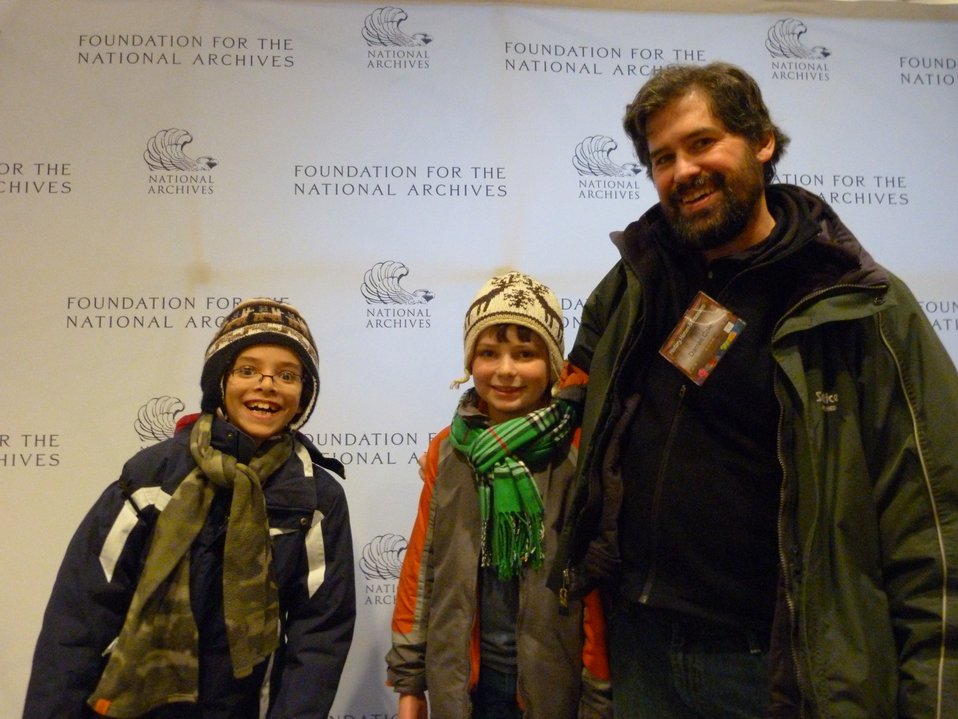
Rotunda Sleepover

Rotunda Sleepoverr; Photo provided by The Foundation for the National Archives